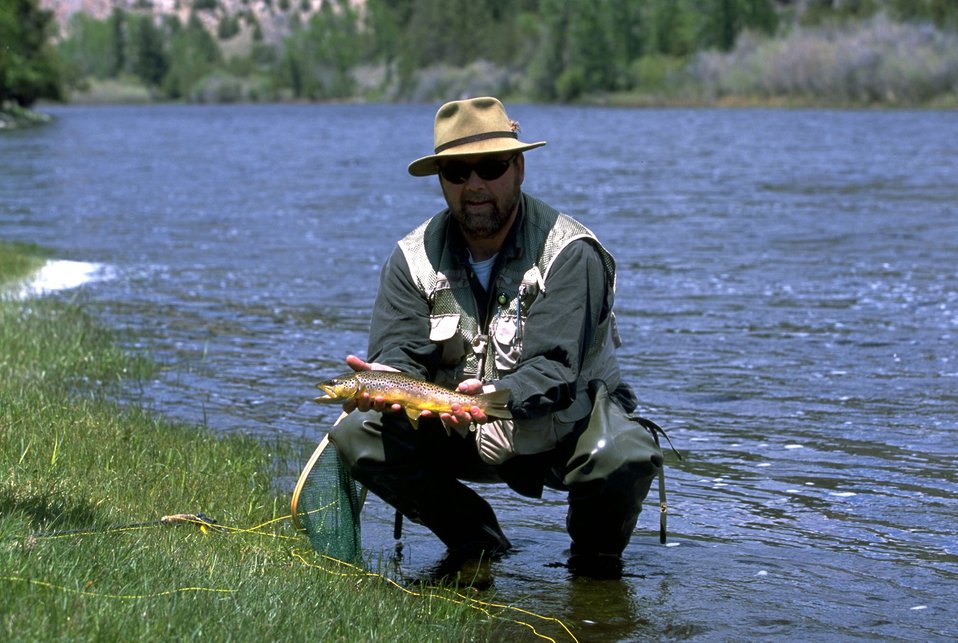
Fisherman with his catch